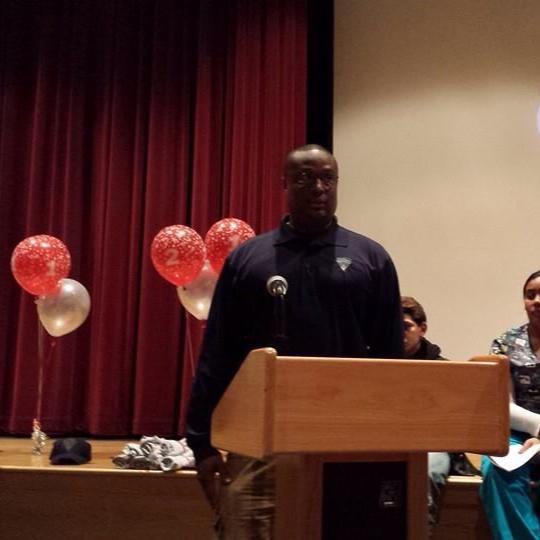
Fitchburg Community Action Team (FCAT) TAKE PART IN NATIONAL DRUG FACTS WEEK

Fitchburg Community Action Team (FCAT) held an after school IQ challenge event as part of its participation in National Drug Facts Week. FCAT joins teens across the U.S. in week-long effort to shatter the myths on drugs Fitchburg, MA. — As part of the NDFW celebration, Fitchburg students hosted a presentation, designed by youth, for youth, to increase awareness of drugs and drug abuse.
Students held a special community assembly at Fitchburg High School.